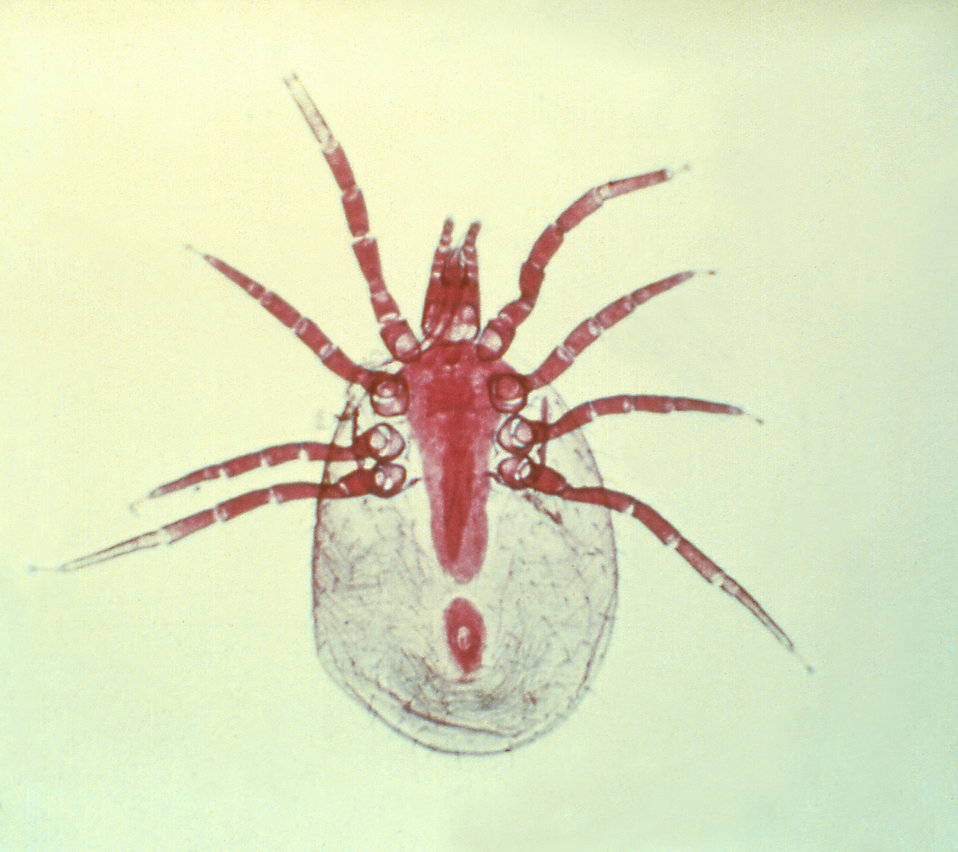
This photograph shows a mite, a member of the Class Arachnida, and the Order Acari.